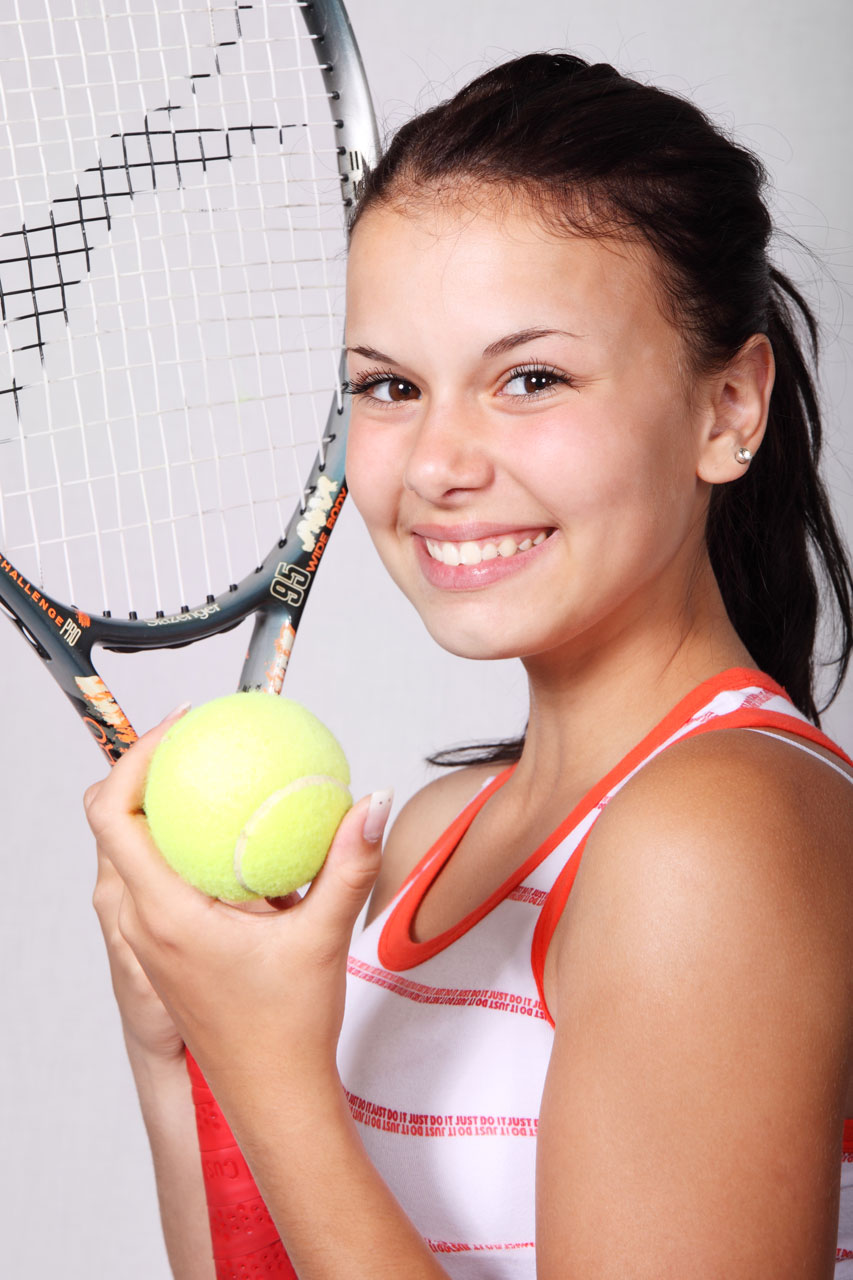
Tennis player

Female tennis player with racket and tennis ball.